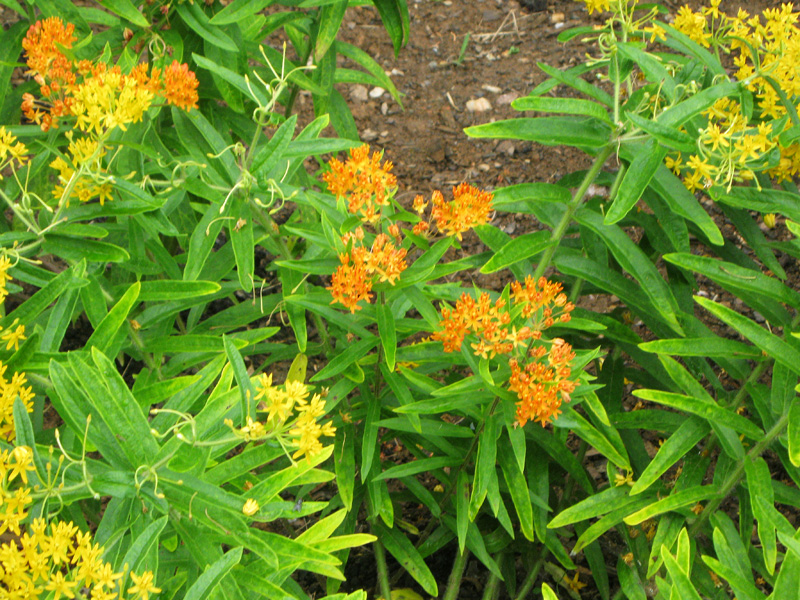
Milkweed grows in a garden in Maryland.